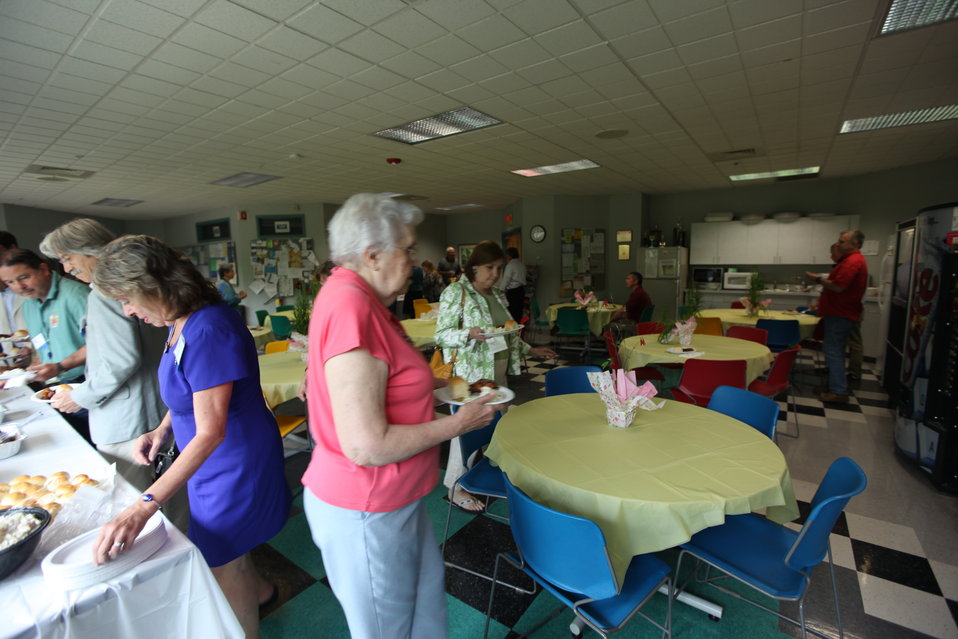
Northeast Region Employee Appreciation Awards

Luncheon